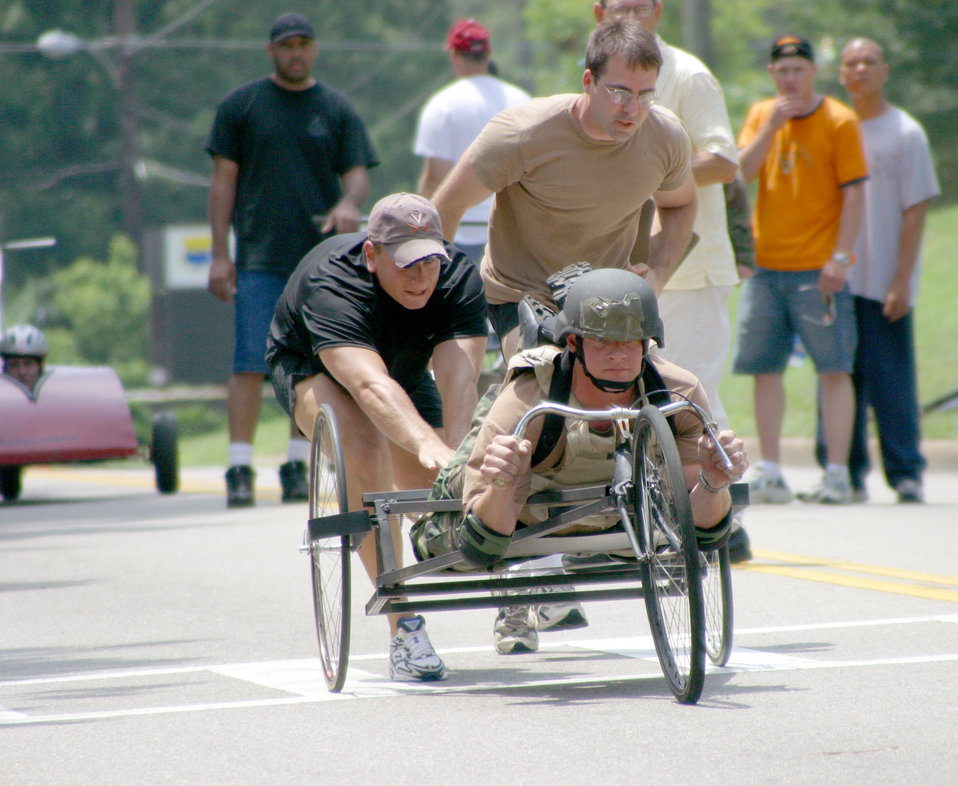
On his soap box

POPE AIR FORCE BASE, N.C. -- Airmen with the 14th Air Support Operations Squadron push fellow team member Staff Sgt. Damien Gerrior in their box derby car here recently. The two-person teams pulled the cars forward a few yards before releasing the car and its driver. The drivers then steered the cars downhill to the finish line at the 5th Annual Pope Box Derby.